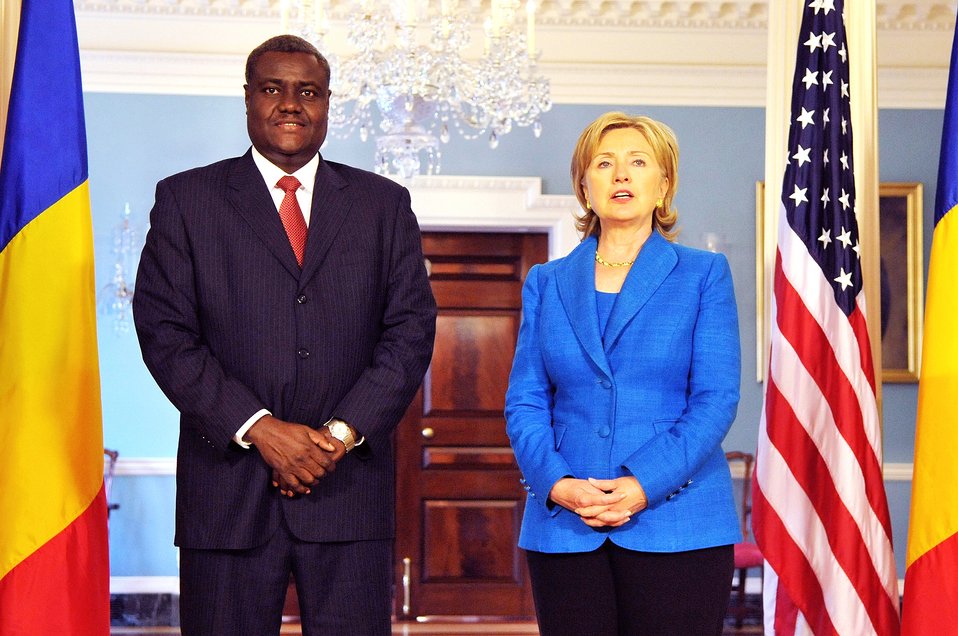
Secretary Clinton Meets With Minister of Foreign Affairs and African Integration of the Republic of Chad

U.S. Secretary of State Hillary Rodham Clinton holds a bilateral meeting with His Excellency Moussa Faki Mahamat, Minister of Foreign Affairs and African Integration of the Republic of Chad at the U.S. Department of State in Washington, DC July 15, 2009.